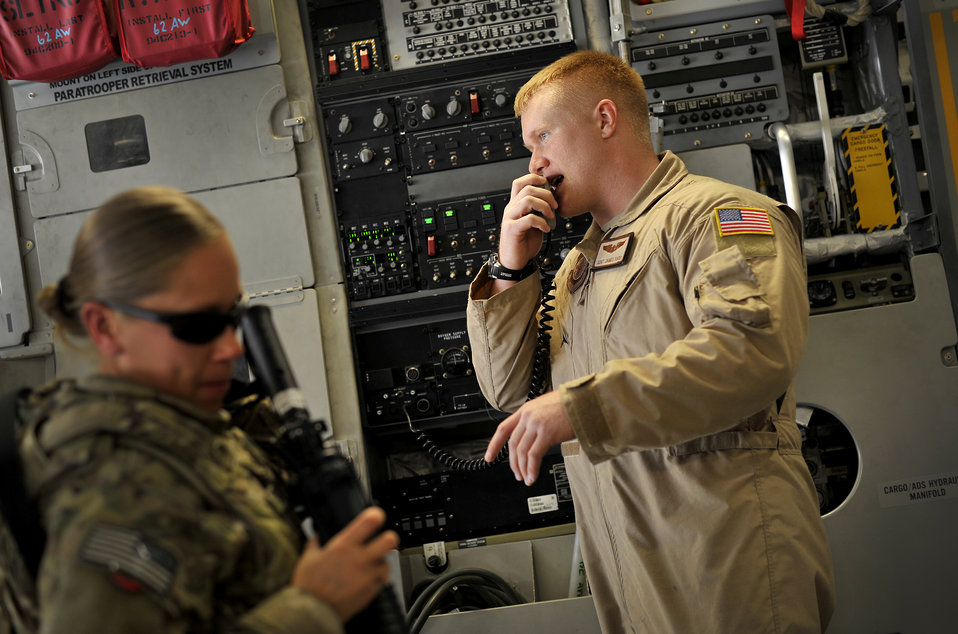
C-17 loadmaster

Staff Sgt. James Harp gives instructions to passengers during a redeployment mission headed for Afghanistan, Sept. 15, 2012. Harp is a C-17 Globemaster III loadmaster, currently part of the 817th Expeditionary Airlift Squadron, deployed to the Transit Center at Manas, Kyrgyzstan. The 817th and their C-17s are an integral piece of the redeployment mission and help to move passengers and cargo within the area of operation.